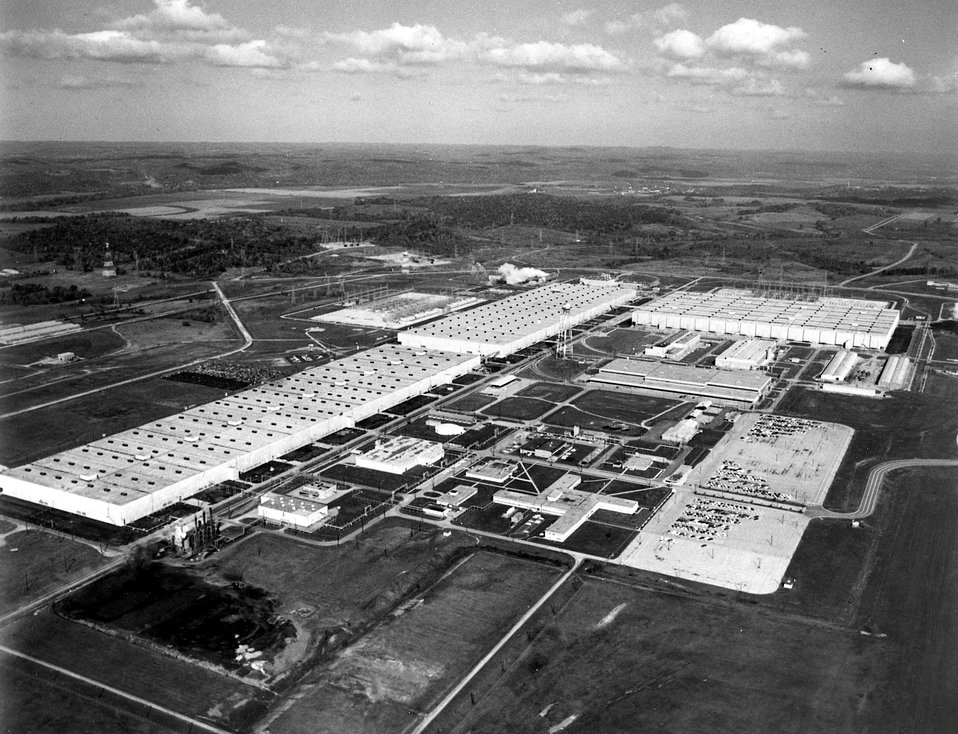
Gaseous Diffusion Plant.